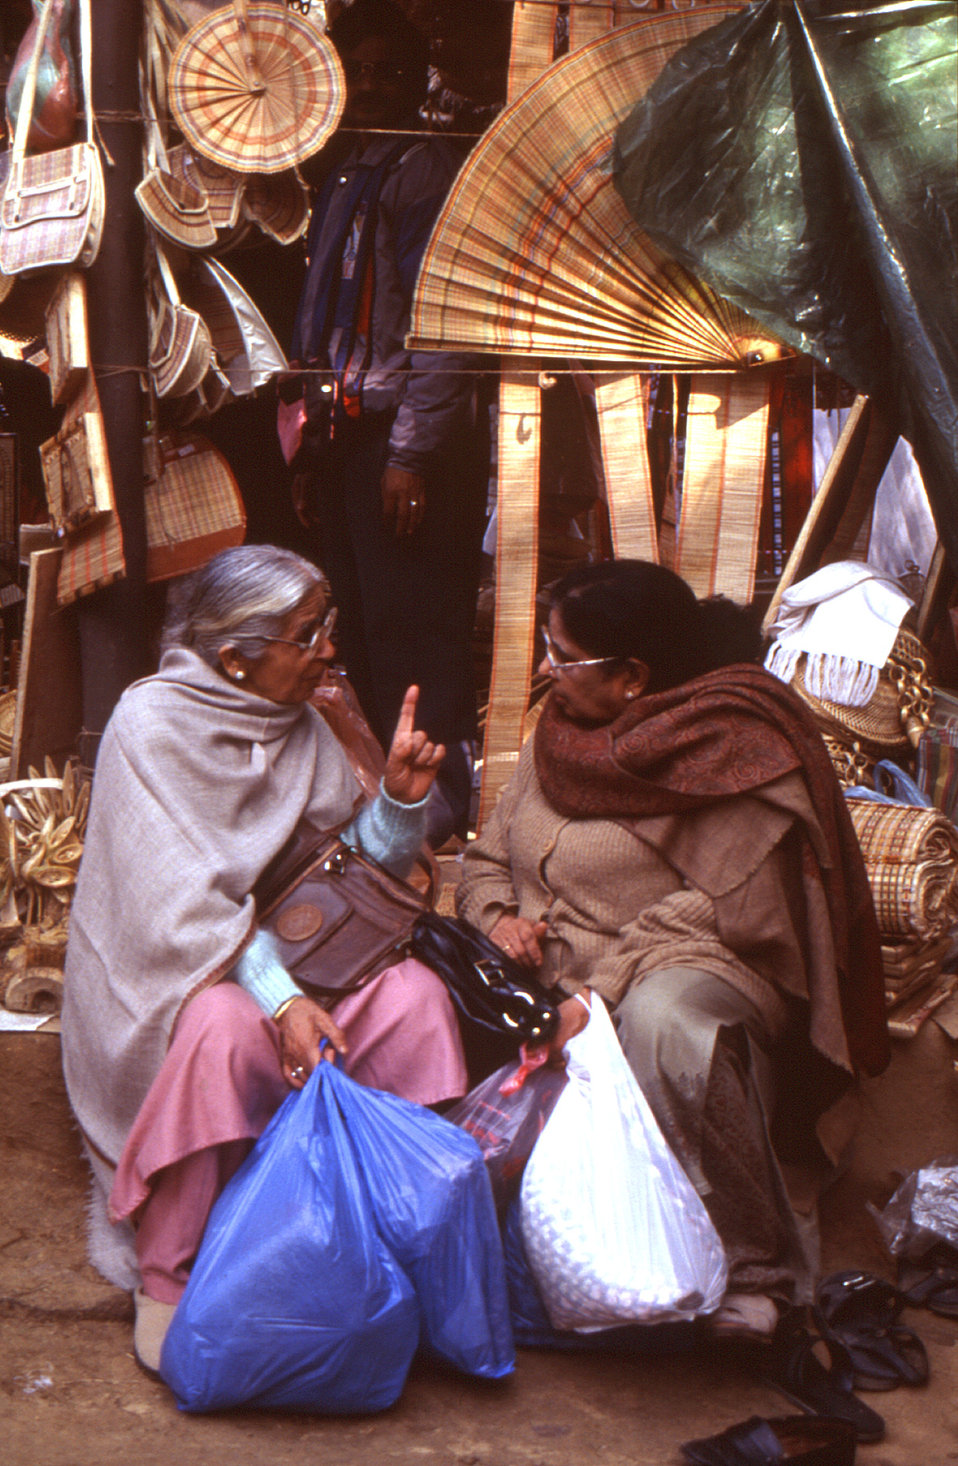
This 2000 image depicted two women seated at a local crafts fair in Delhi, India while they had been discussing daily events. The photograph was presented by Chris Zahniser, B.S.N., R.N., M.P.H., a STOP Transmission of Polio (STOP) immunization initiative team member and photographer. Ms. Zahniser was at the time assigned to the state of Uttar Pradesh in northern India, and spent three months working in the Districts of Gorakhpur and Deoria.